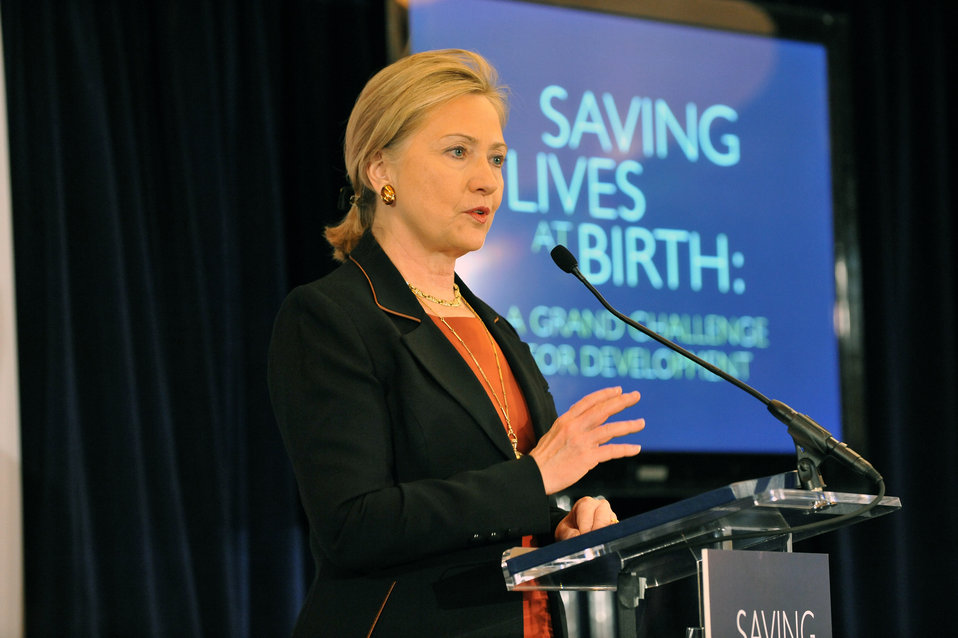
Secretary Clinton Delivers Remarks on Maternal and Child Health

U.S. Secretary of State Hillary Rodham Clinton delivers remarks at the launch of a Global Partnership on Maternal and Child Health led by USAID, the Government of Norway, The Bill and Melinda Gates Foundation, Grand Challenges Canada, and the World Bank, in the Ronald Reagan Building in Washington, D.C., on March 9, 2011.